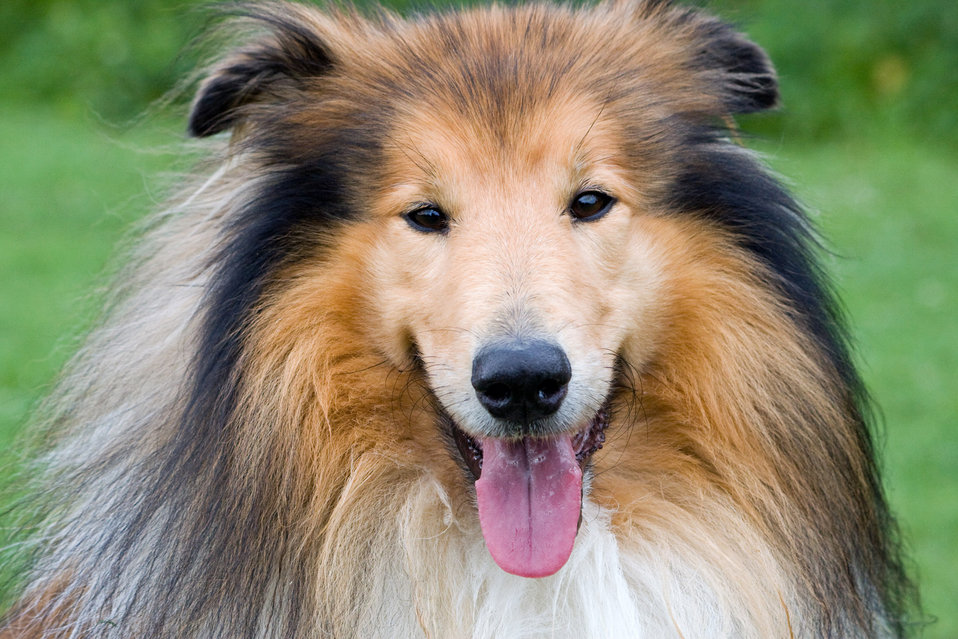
Rough collie dog

Beautiful close-up portrait of a rough collie dog.